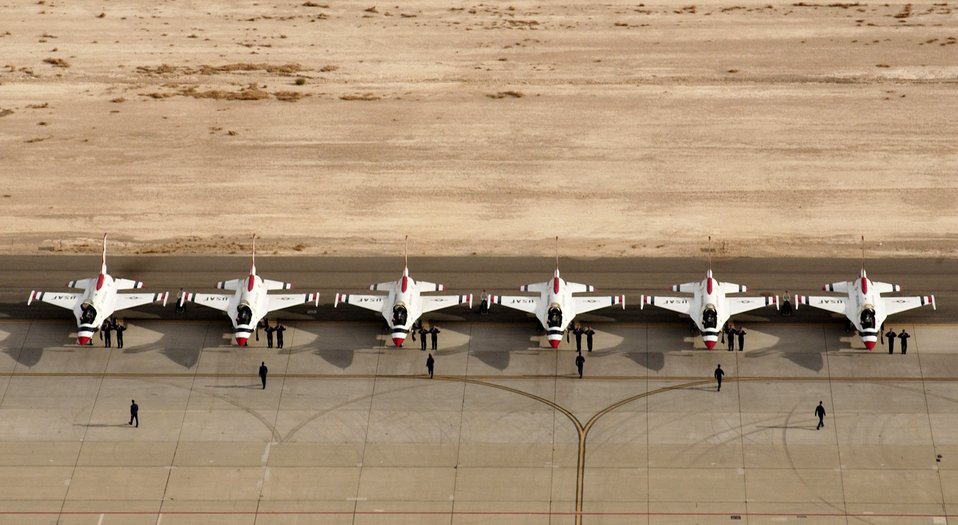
Aviation Nation at Nellis

The U.S. Air Force Air Demonstration Squadron, the Thunderbirds, begin their ground show at the start of their demonstration during Aviation Nation 2006 Nov. 12 at Nellis Air Force Base, Nev. Aviation Nation has been called one of the most diverse, entertaining and well run air shows in America.